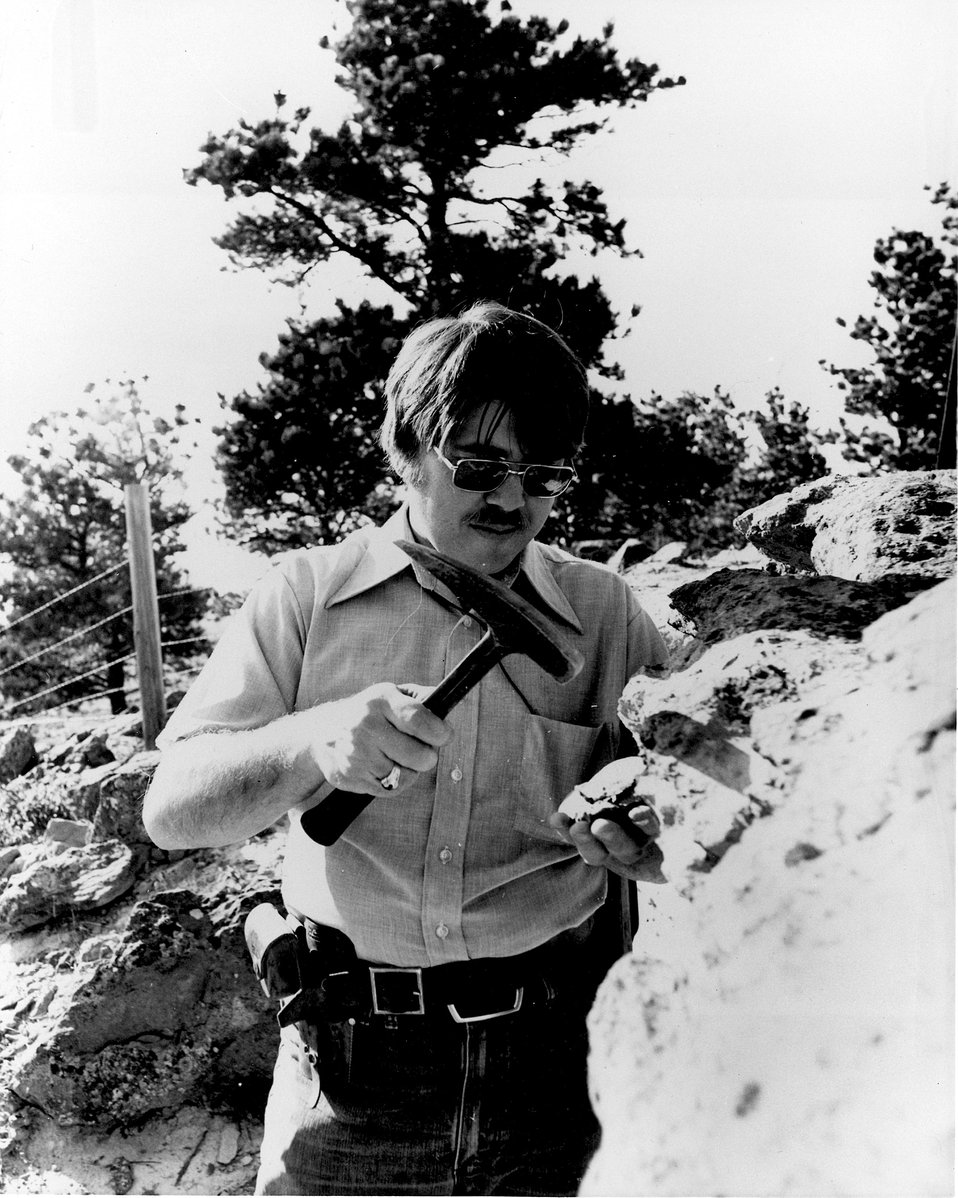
Using a geological pick, Ed Russel, a geologist of Casper, Wyoming's Conoco uranium exploration project examines samples of rocks taken from an outcrop on a Powder River Basin site in Wyoming. c. 1976